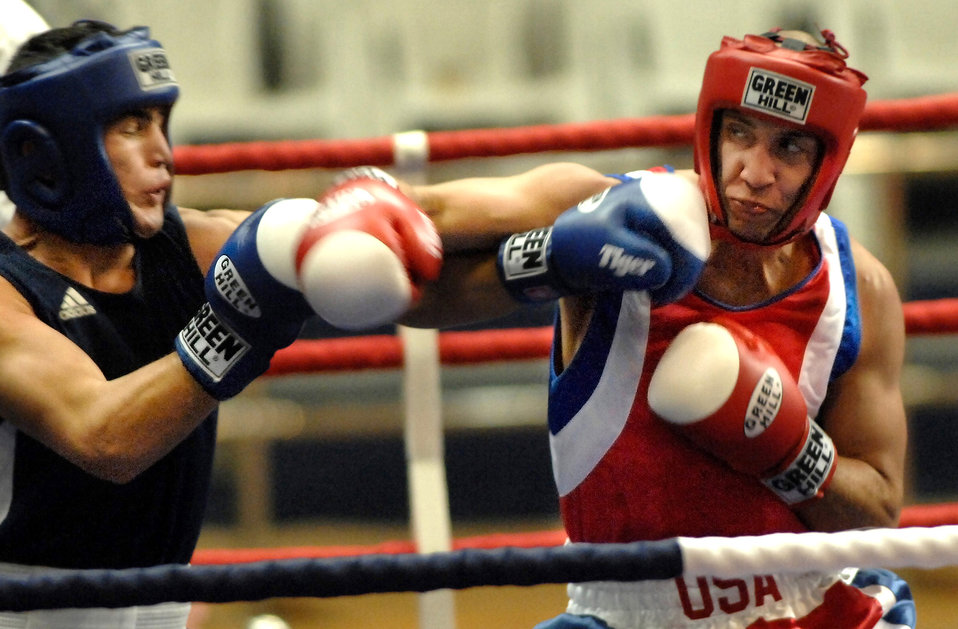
Americans compete in Military World Games

Army Capt. Boyd Melson (right) throws a right hook against Pvt. Hudaynazarov Rawshan of Uzbekistan during the Military World Games Boxing competition Oct. 15 in Hyderabad, India. The Conseil Internationale du Sport Militaire's Military World Games event is the largest international military Olympic-style event in the world. In this year's fourth edition of the Games, 103 countries and more than 5,000 athletes are scheduled to compete Oct. 14 through 21 in boxing, diving, soccer, handball, judo, military pentathlon, parachuting, sailing, shooting, swimming, volleyball and track and field. The purpose of the Military World Games is to promote friendship through sport.